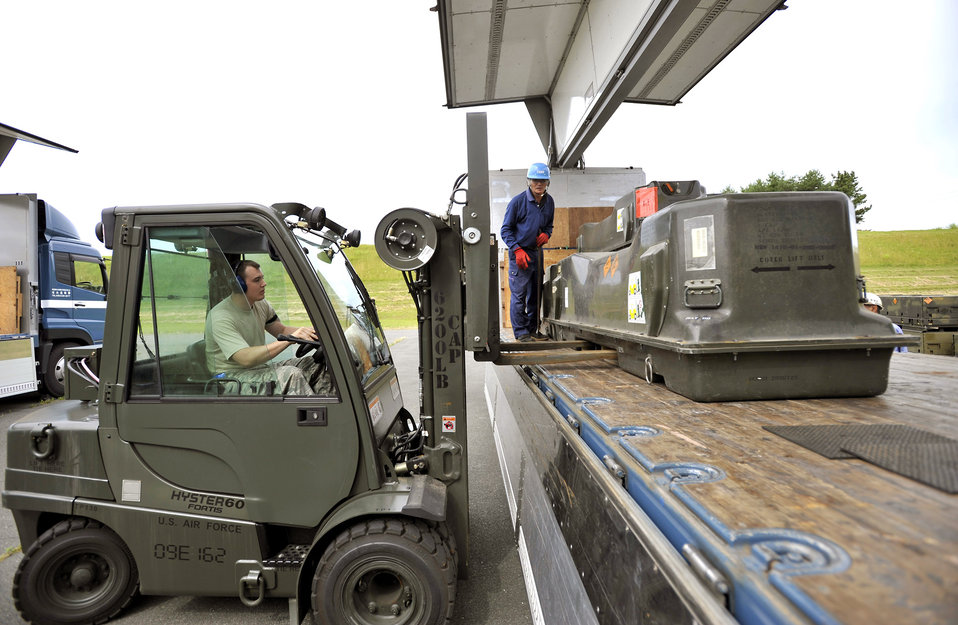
Munitions disposal

Senior Airman Derek White loads munitions onto a flatbed truck July 13, 2010, at Misawa Air Base, Japan. Airmen there moved more than 700 tons of munitions in an effort to dispose of unserviceable and unused items. Airman White is a munitions systems specialist with the 35th Maintenance Squadron.